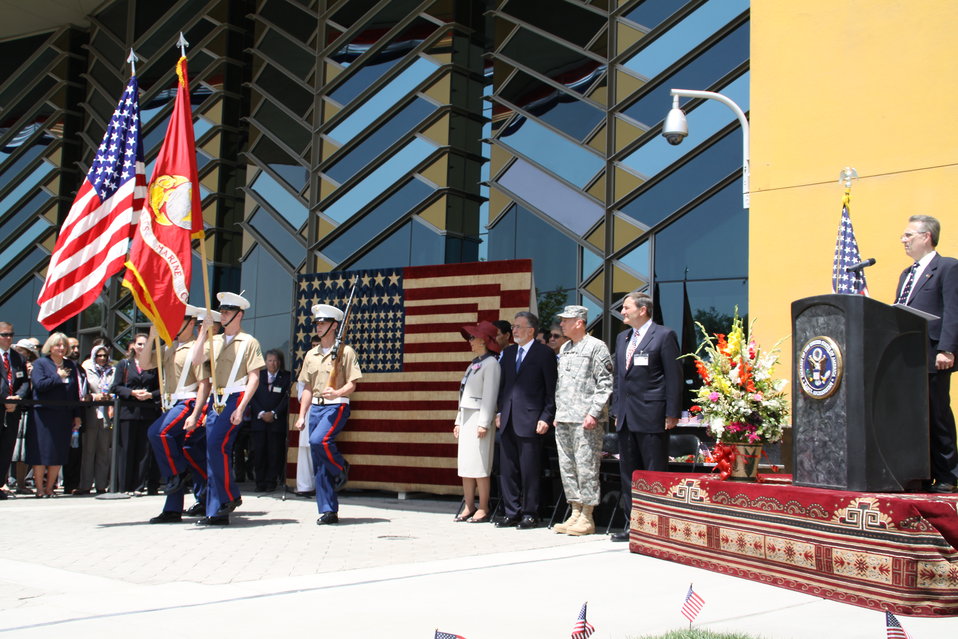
Kabul Official July 4th Celebration